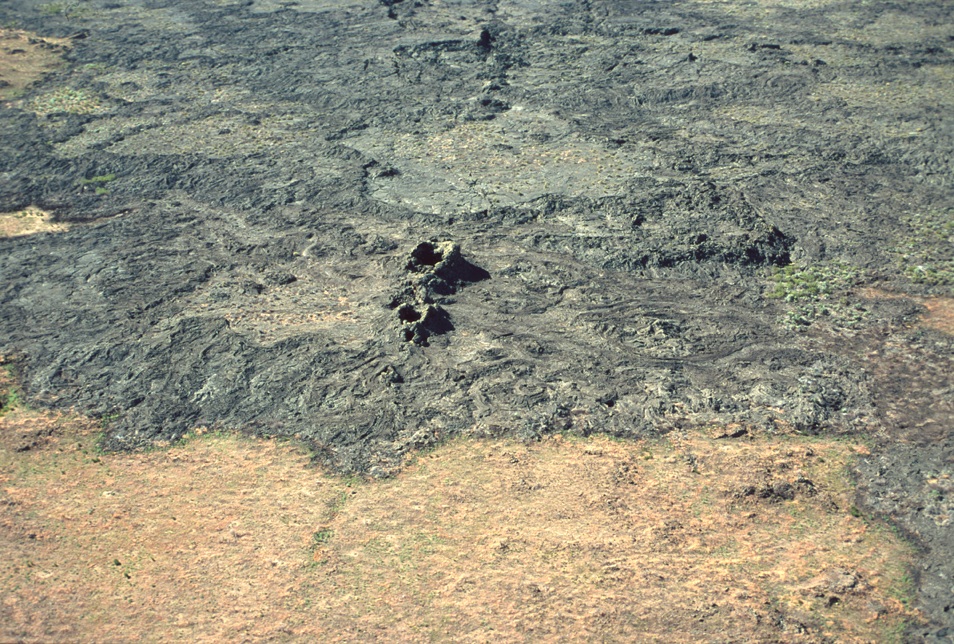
Shoshone Field Office USRD Upper Snake River District